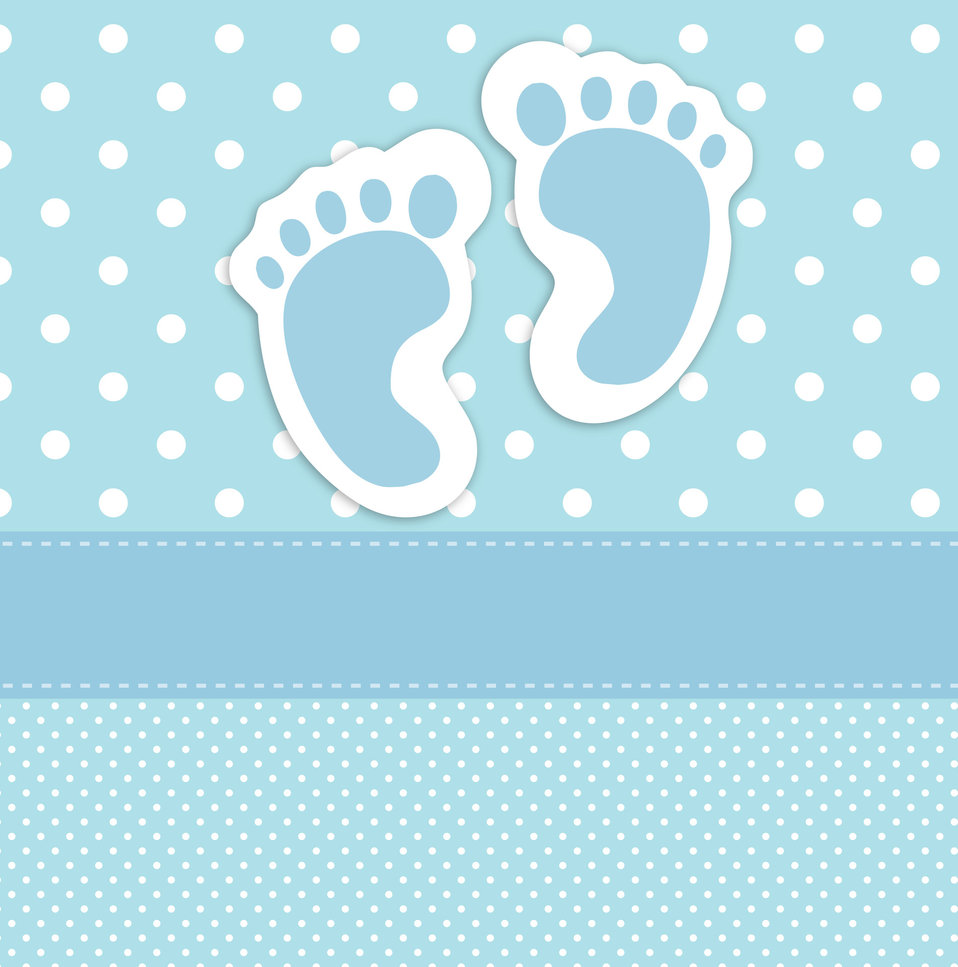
Baby footprints card template

Blue polka dots baby boy footprints card template for scrapbooking.